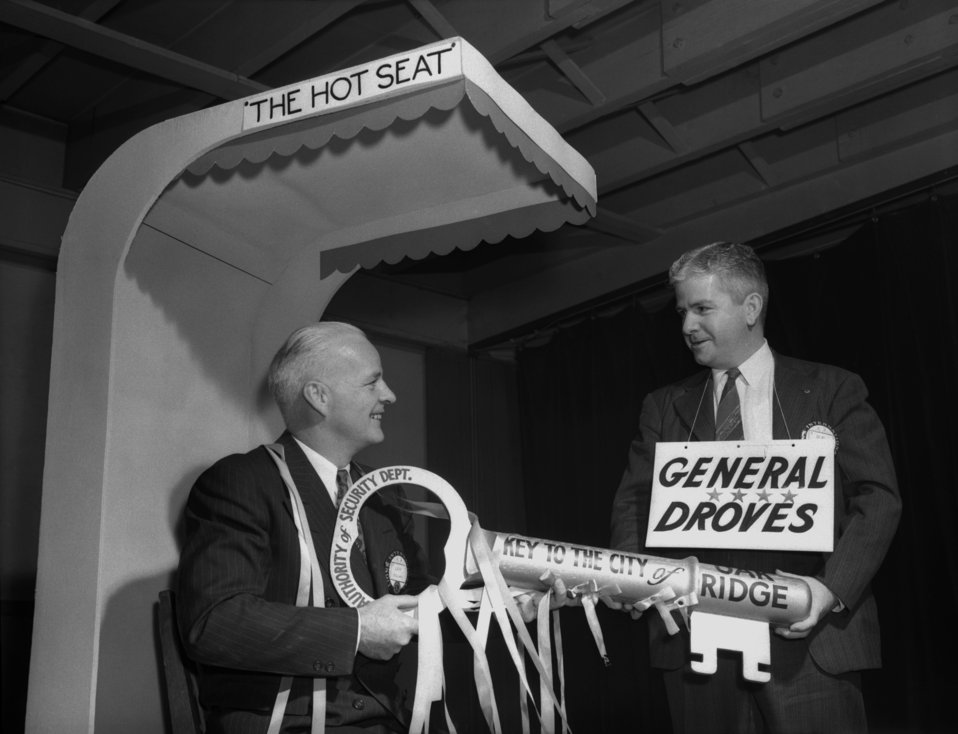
Lyons Club Oak Ridge

3336-4a DOE photo Ed Westcott 3-10-1947 Oak Ridge Tennessee